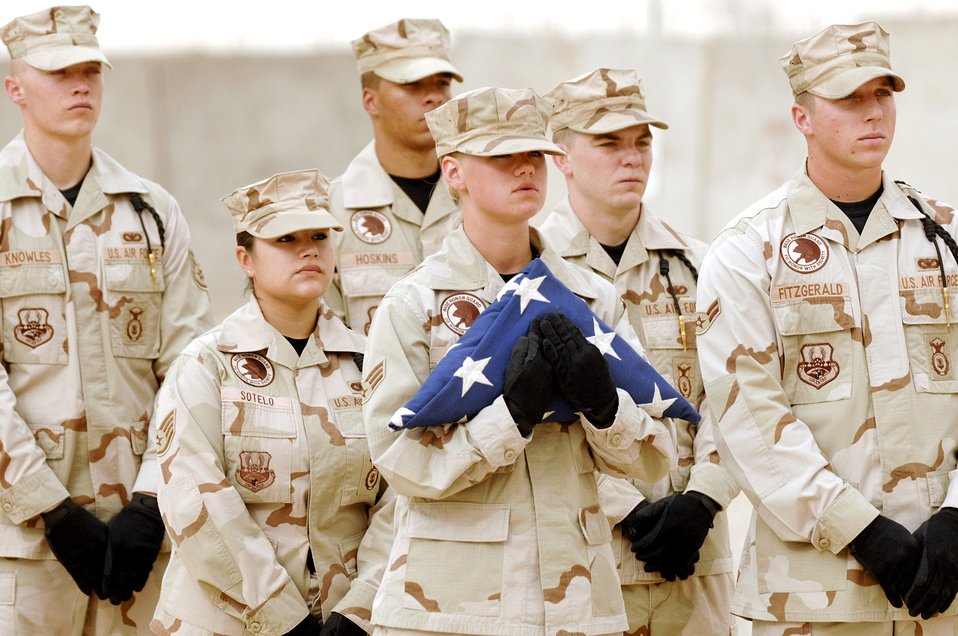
Honoring a fallen Airmen

Honor guard members from the 407th Expeditionary Group at Ali Air Base, Iraq, wait to fold the flag during a fallen Airmen ceremony May 28 in remembrance of Staff Sgt. John Self. Sergeant Self was a security forces member assigned to the 732nd Expeditionary Security Forces Squadron at Camp Bucca, Iraq, and was killed May 14 by an improvised explosive device while on patrol.